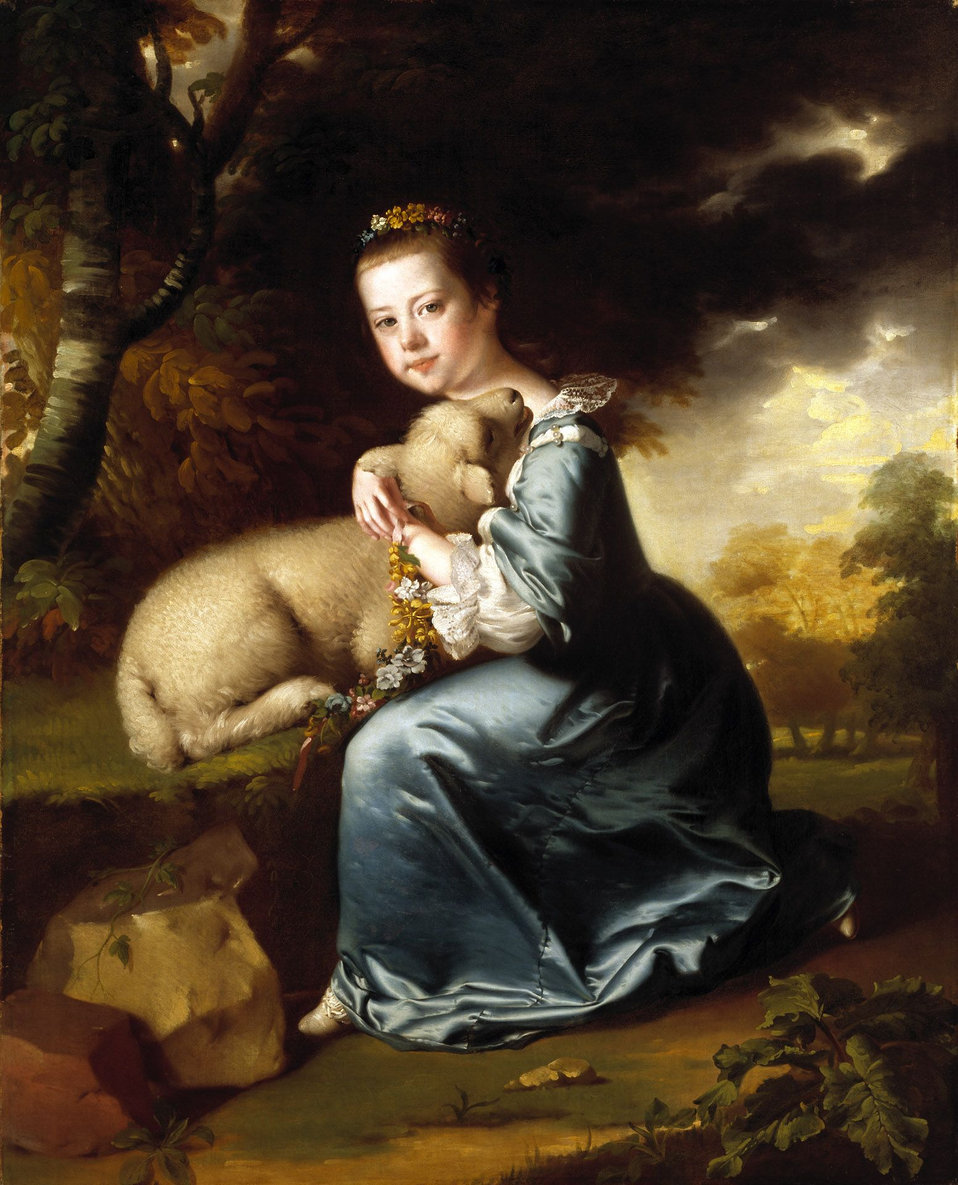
Miss Frances Warren by Joseph Wright of Derby, ARA